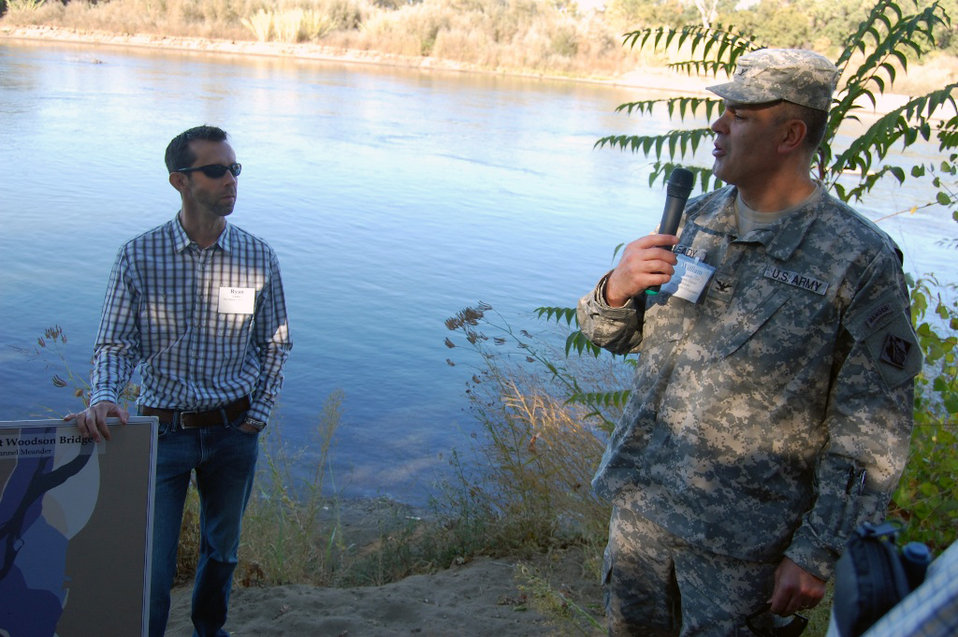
Northern California water education tour

U.S. Army Corps of Engineers Sacramento District commander Col. Bill Leady speaks to participants at the Water Education Foundation’s Northern California Tour at Woodson Bridge Park in Corning, Calif., Oct. 17, 2012. Leady and other speakers discussed innovative programs for flood management, groundwater management and salmon restoration while visiting Oroville and Shasta dams, Red Bluff Diversion Dam, the Feather River Fish Hatchery, Clear Creek Restoration Project and Glenn-Colusa Irrigation District’s fish screen and Delevan Wildlife Refuge.